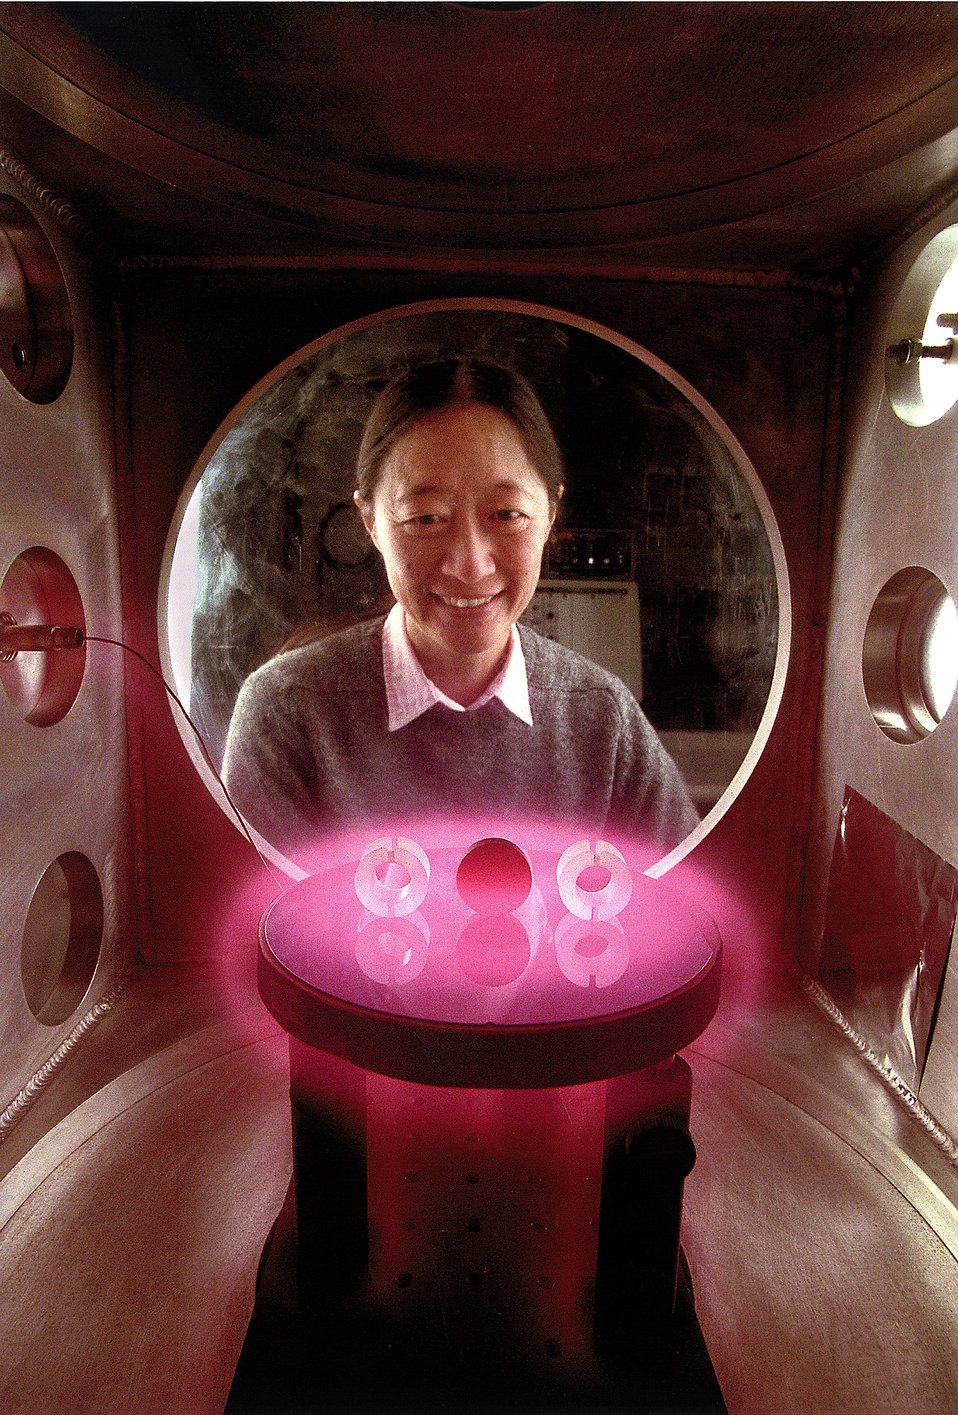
SCIENTIST CHECKS PROCESSING OF COMPONENTS IN SANDIA'S PLASMA PROCESSING RESEARCH LAB.

THE SANDIA SCIENTIST IS CHECKING THE PROCESSING OF COMPONENTS IN THE PLASMA PROCESSING RESEARCH LAB. PLASMAS ARE HOT GASES USED TO ETCH CIRCUITS ON MICROCHIPS AND TO CLEAN THE SURFACES OF COMPONENTS TO ENHANCE ADHESION.